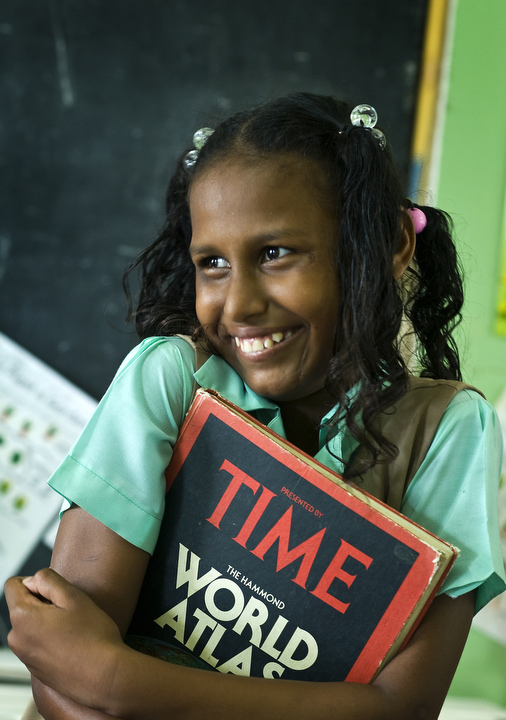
Operation Southern Partner paints a brighter future in Belize

An 11 year-old schoolgirl holds her favorite book while talking to classmates about the Airmen deployed from Operation Southern Partner who are outside painting the Stella Maris School for the Disabled June 8 in Belize City, Belize.